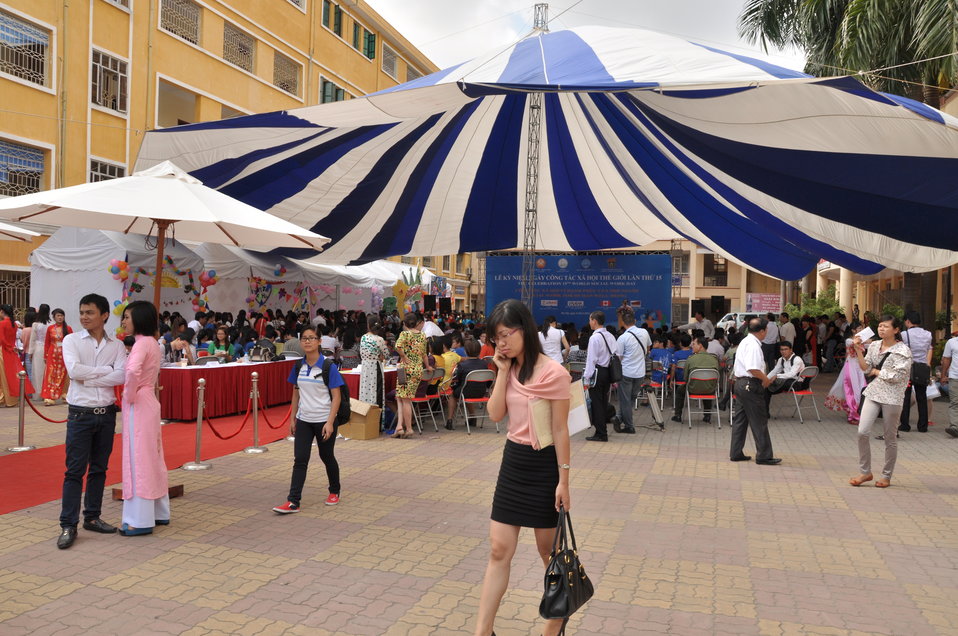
USAID Supports Social Work Education

Photo: @USAIDVietnam, November 9, 2012